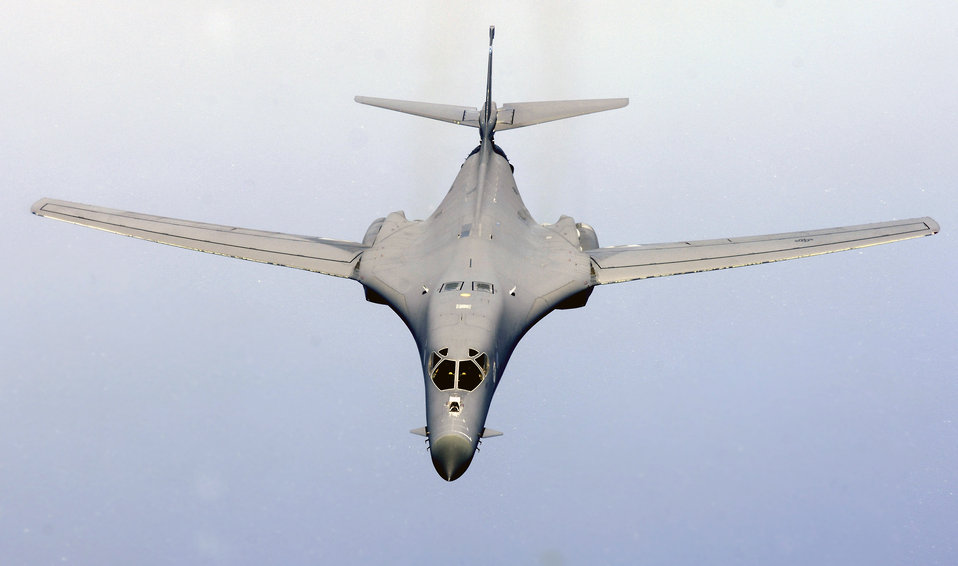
Nov. 22 airpower summary: B-1B bombs anti-Afghan forces

A B-1B Lancer prepares to connect with a KC-135 Stratotanker refueling boom over the Indian Ocean. A B-1B like this one flew a close-air-support mission in support of Operation Enduring Freedom and bombed anti-Afghan forces.